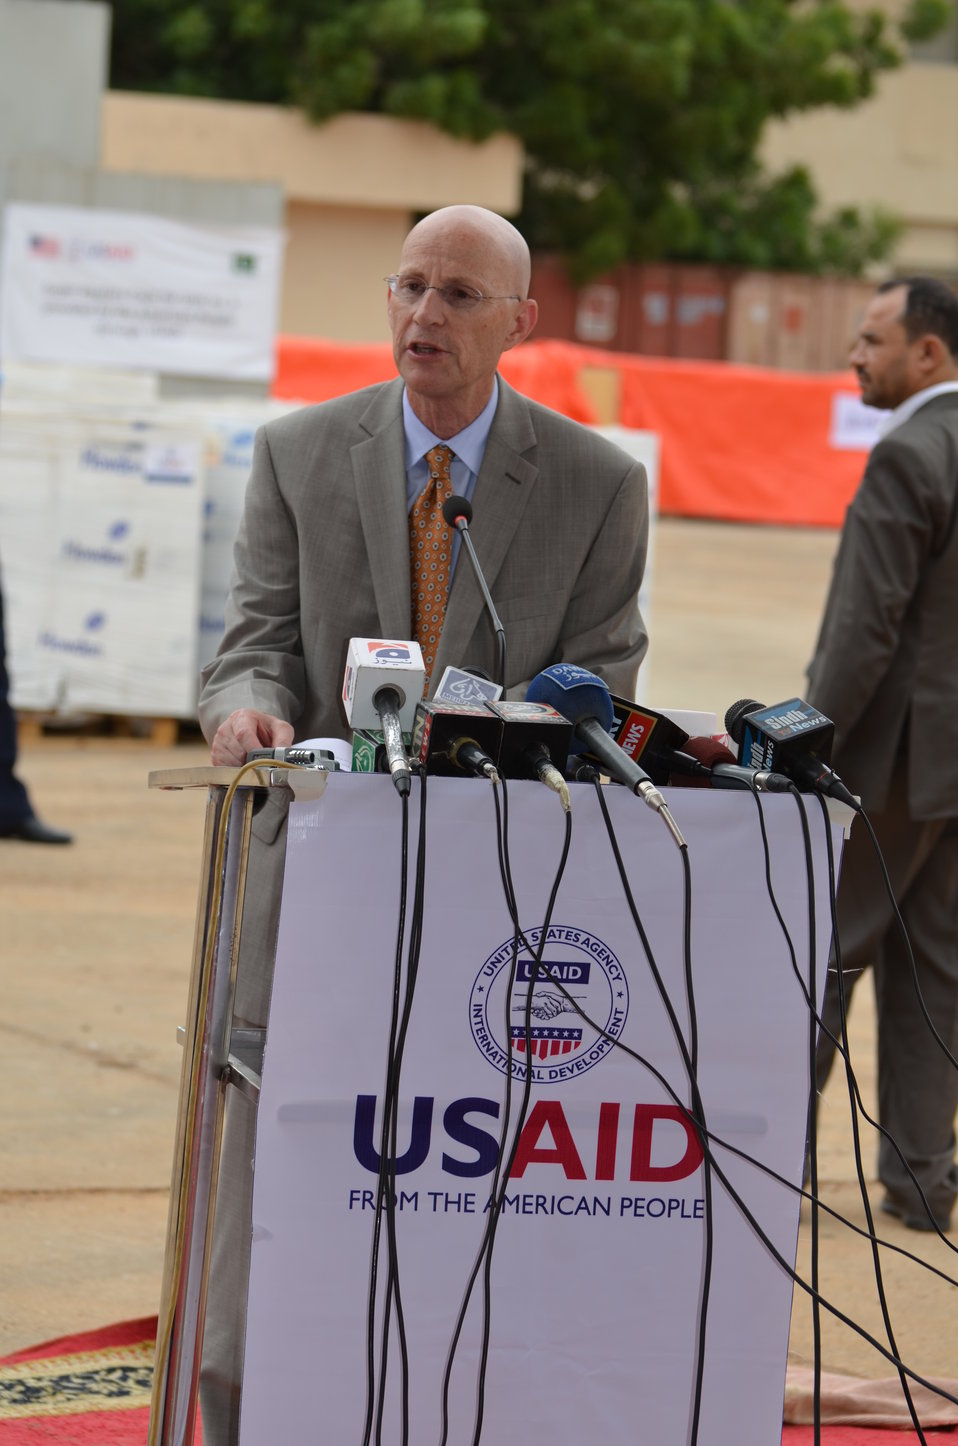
USAID Mission Director Gregory Gottlieb addressing the event